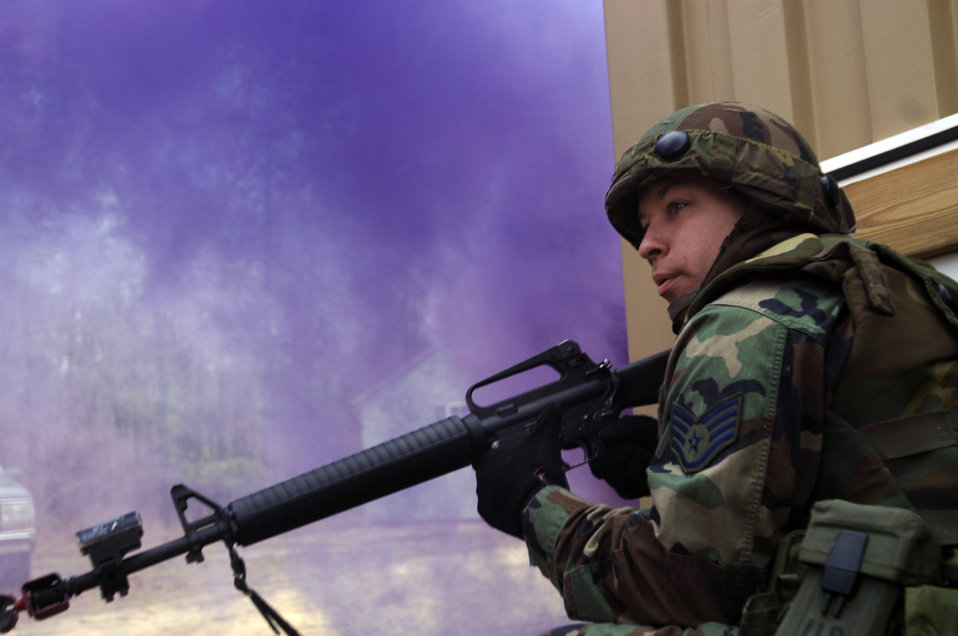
Air Force training makes Airmen safer, more aware

Staff Sgt. James Smith takes cover while purple smoke bombs and gunfire rain upon his position from simulated insurgents during the Contingency Skills Training course at the Air Mobility Warfare Center at Fort Dix, N.J., Nov. 14.